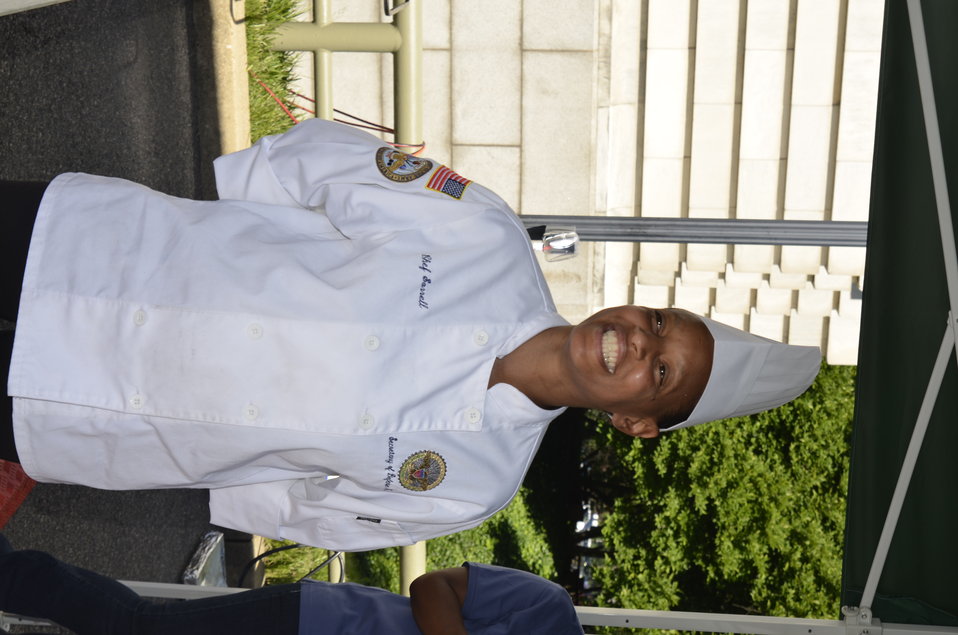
U.S. Army Sergeant Monique Sorrell prepares a meal at the Military Chefs barbeque battle held at the opening of the U.S. Department of Agriculture’s (USDA) Famers Market in the east parking lot at USDA on Friday, Jun. 6, 2014.